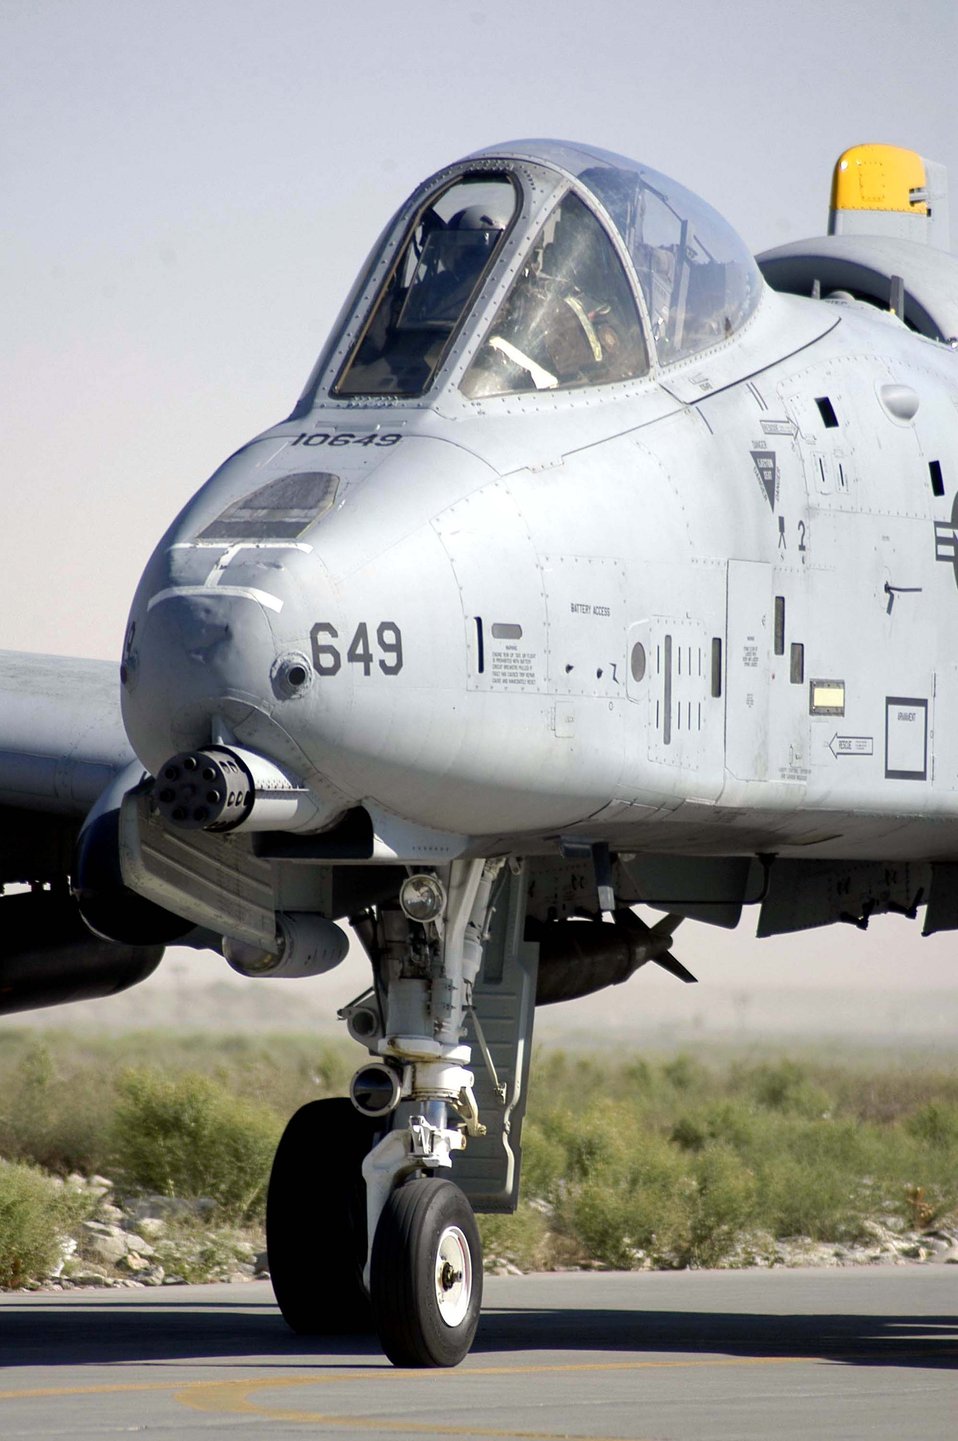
Bagram A-10s surge for summer offensives

An A-10 Thunderbolt II from the 81st Expeditionary Fighter Squadron taxis to a de-arm area at Bagram Air Base, Afghanistan, following a combat sortie. The A-10's 30-mm gun, a signature capability of the aircraft, delivers enormous firepower to support ground forces engaged against anti-coalition extremists.